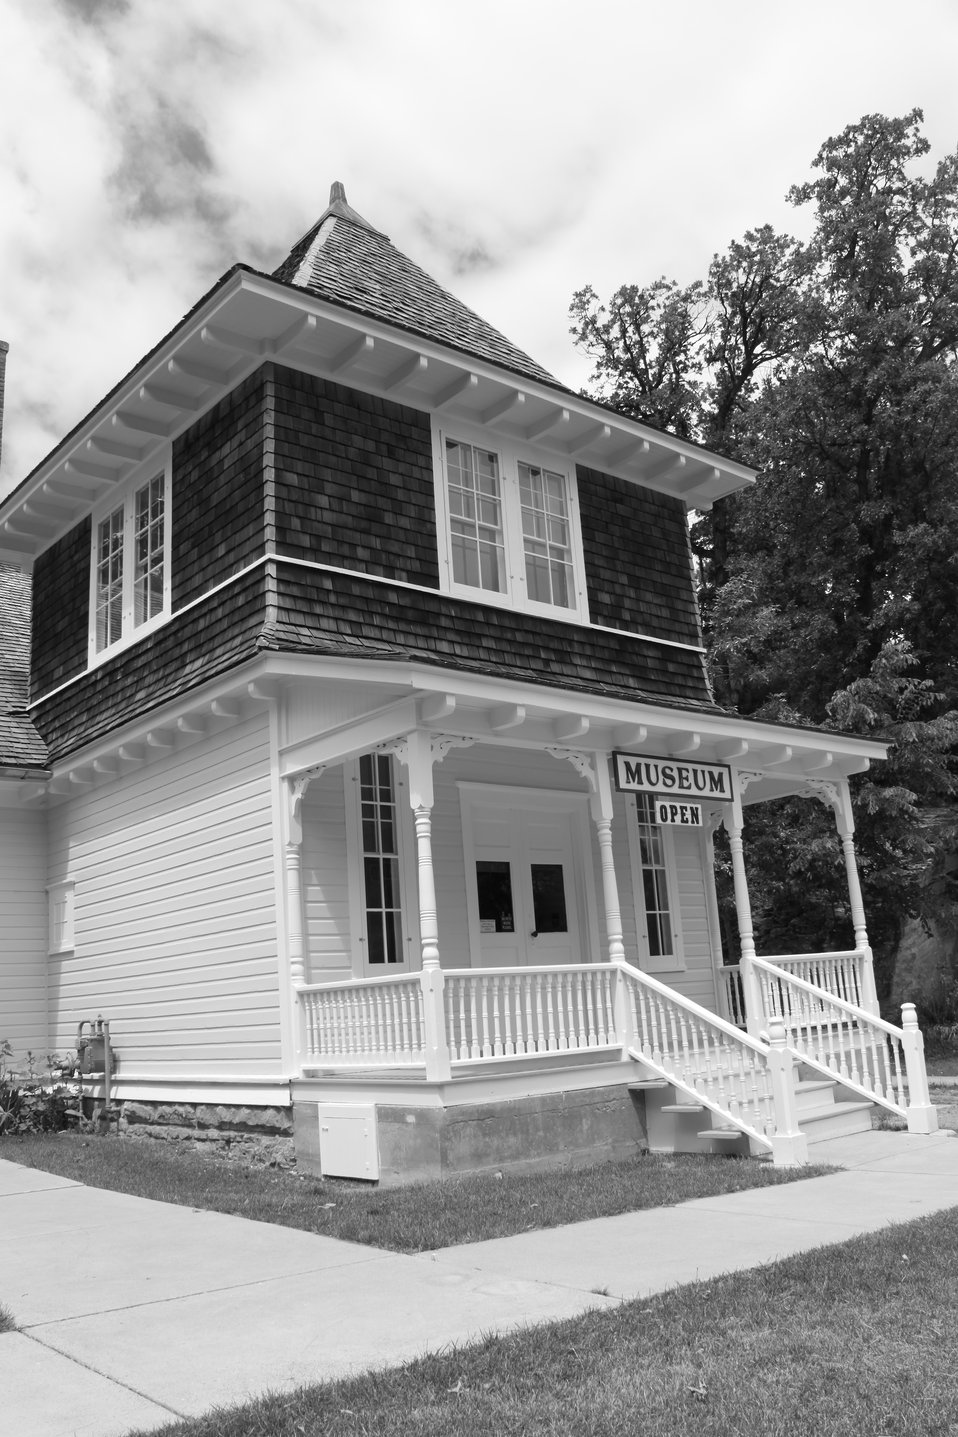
DC Booth Museum

U.S. Fish Commission architect and engineer, H. von Bayer, designed this hatching house ca. 1893 for what was then the Spearfish Fish-Cultural Station in South Dakota. Today it's a musuem displaying artifacts from the conservation-past as part of the D.C. Booth Historic National Fish Hatchery & Archives. Some 175,000 items have been cataloged in the archives.

Credit: Craig Springer / USFWS

Photo Contest Entry #148